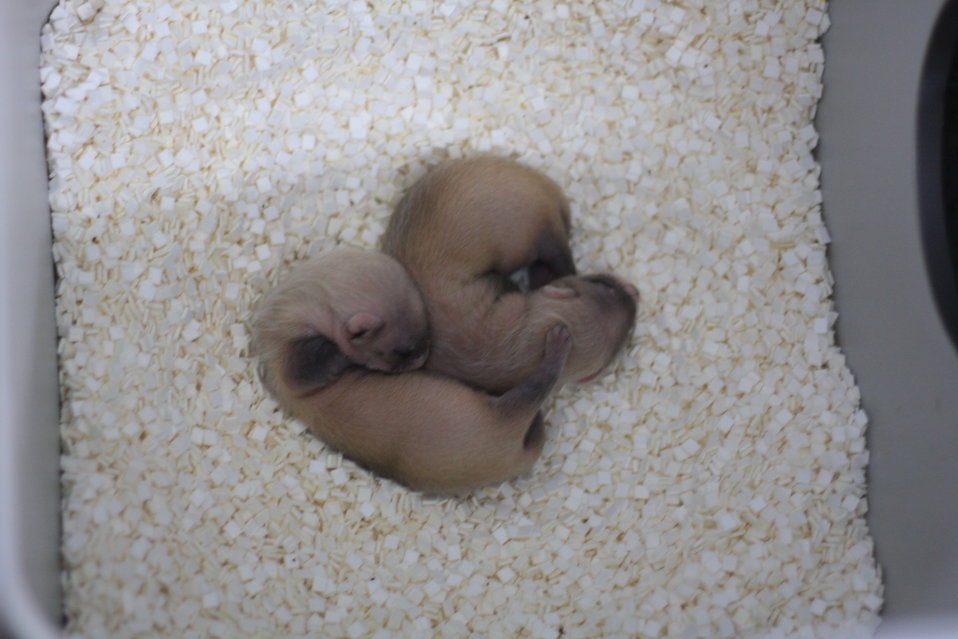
Interns visit the NBFFCC

In the summer of 2012, USFWS Region 6 interns visited the National Black-footed Ferret Conservation Center (NBFFCC) in Colorado to learn how the program reintroduces the endangered Black-footed ferret back into its native habitat.